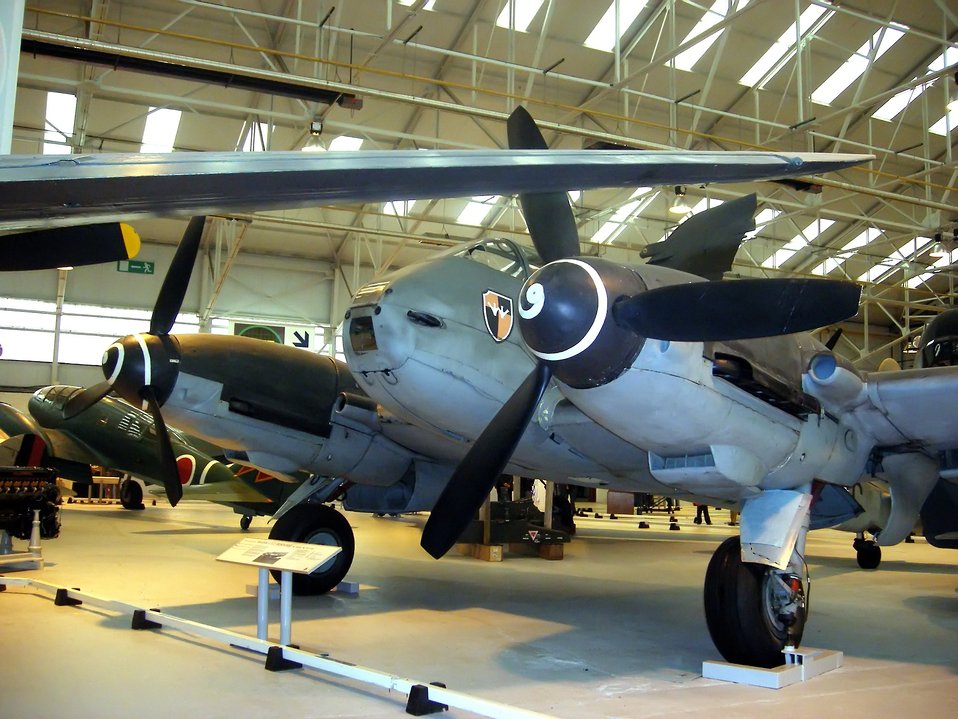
Me 410 A-1/U2, RAF Cosford